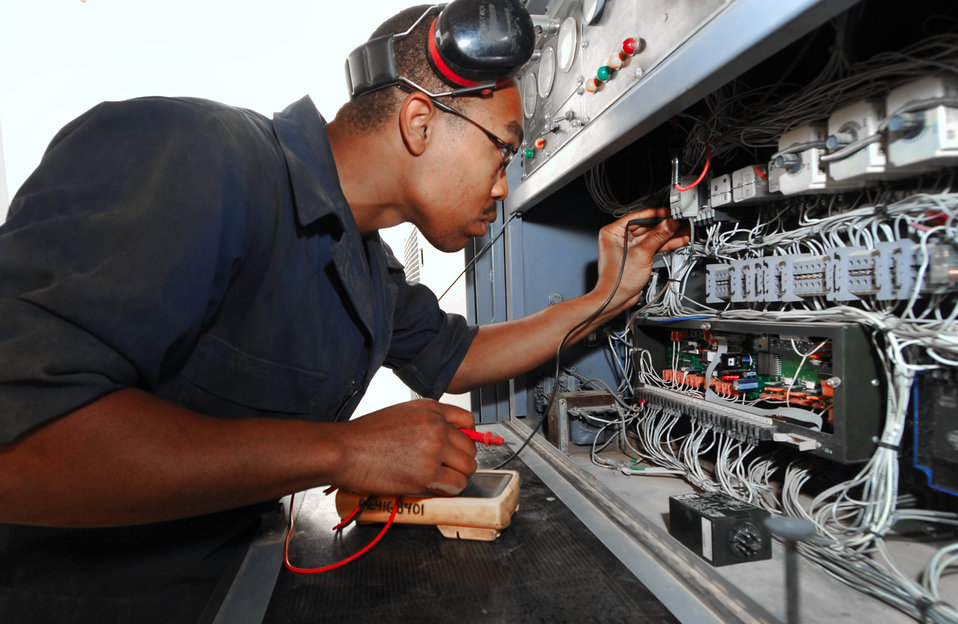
Airmen maintain the fight

Staff Sgt. Steven Jackson uses a multimeter to check for electrical continuity on a generator April 6, 2011, at an air base in Southwest Asia. Sergeant Jackson is a maintainer assigned to the 386th Expeditionary Maintenance Squadron.